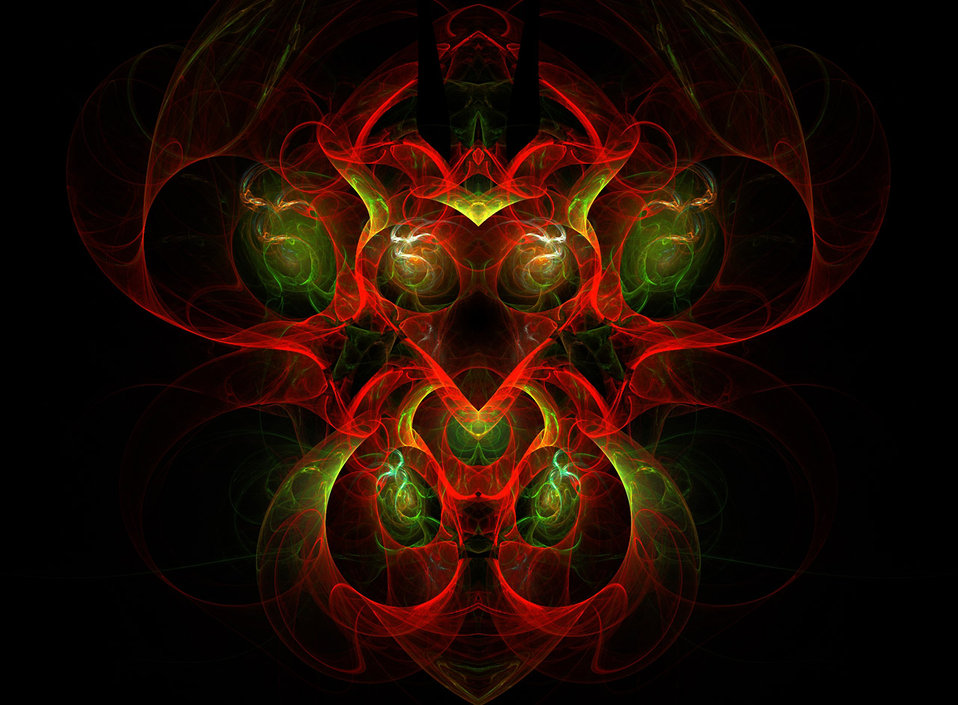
Bright fractal

Fractal in bright red and green.